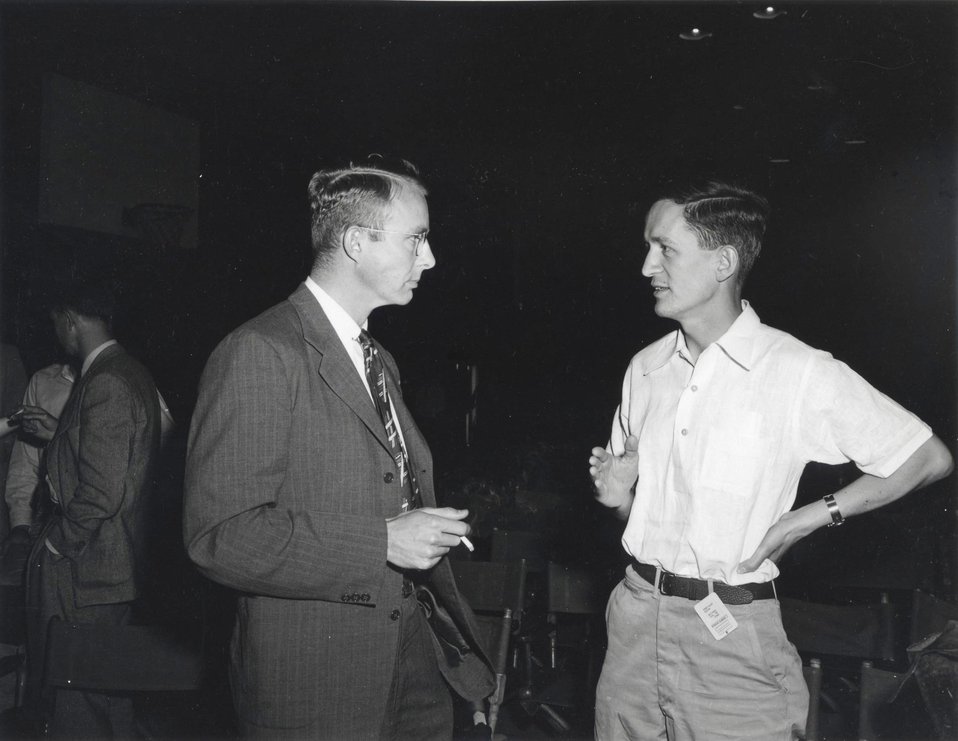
ALVAREZ AND RAMSEY - BOTH NOBEL LAUREATES